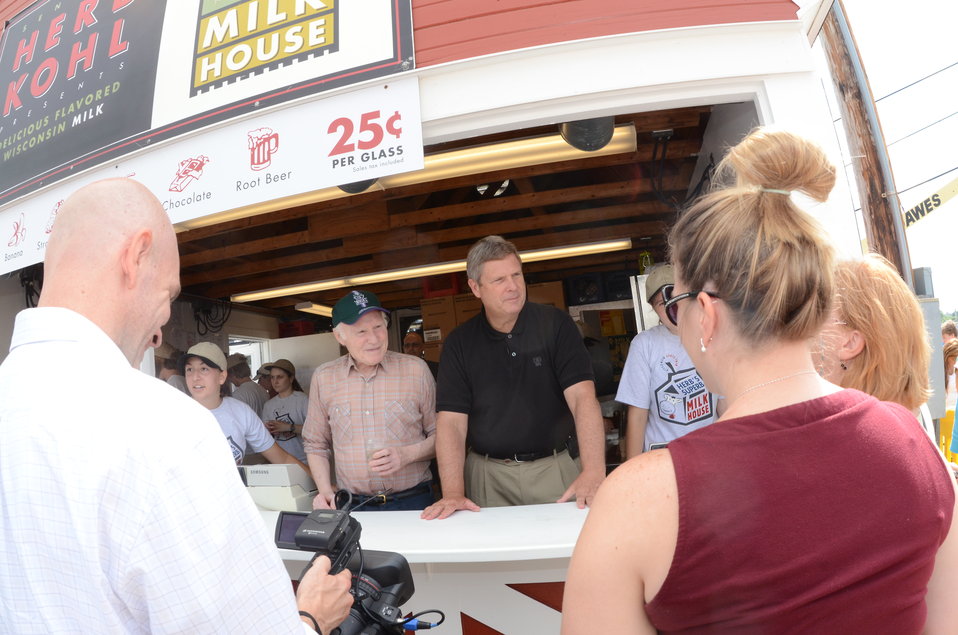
Wisconsin Senator Herb Kohl (left) and Agriculture Secretary Tom Vilsack at the Wisconsin State Fair in West Allis, WI, on Thursday, August 4, 2011, USDA Photo by Lance Cheung.